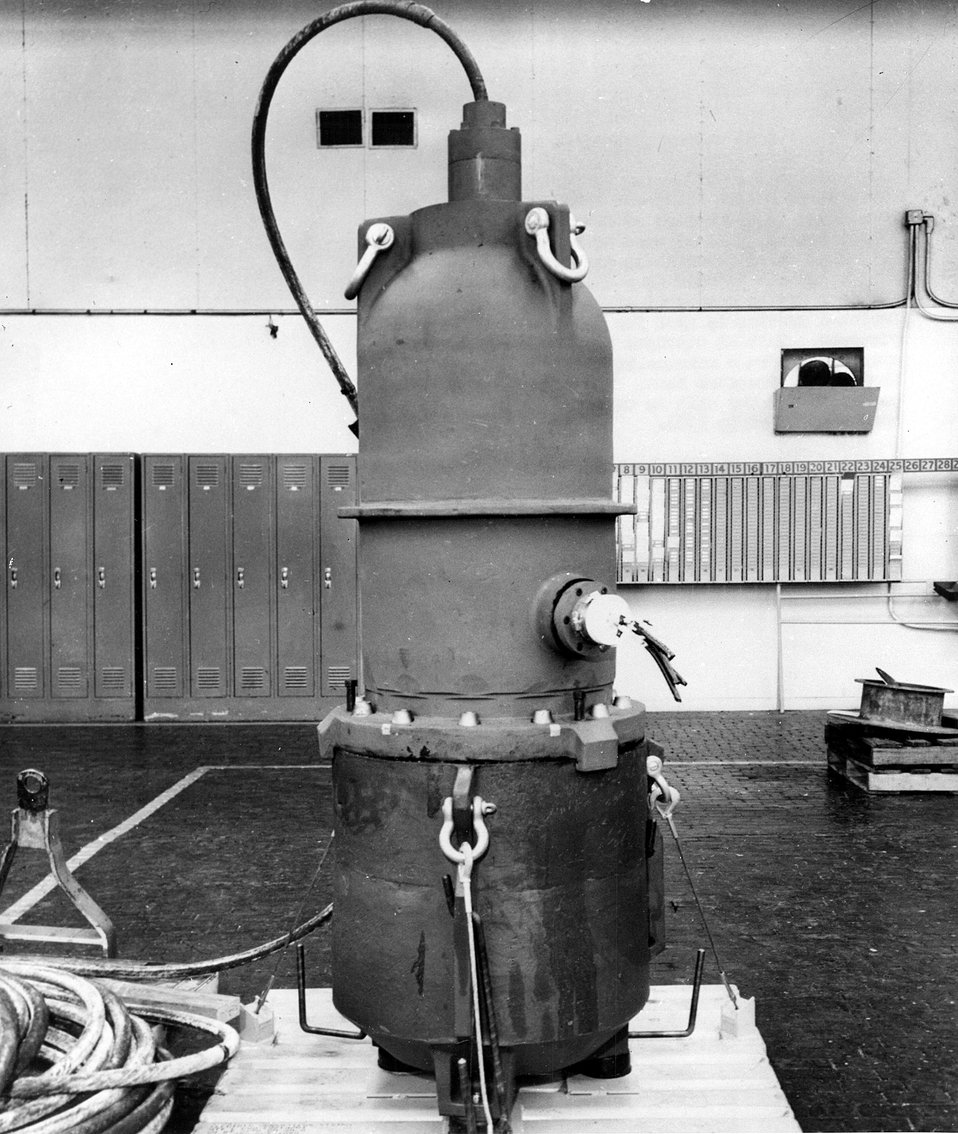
A strontium 90-fueled, radioisotope thermoelectric generator designated SNAP 7E was delivered to the Commission by Martin-Marietta Corporation during September 1962.